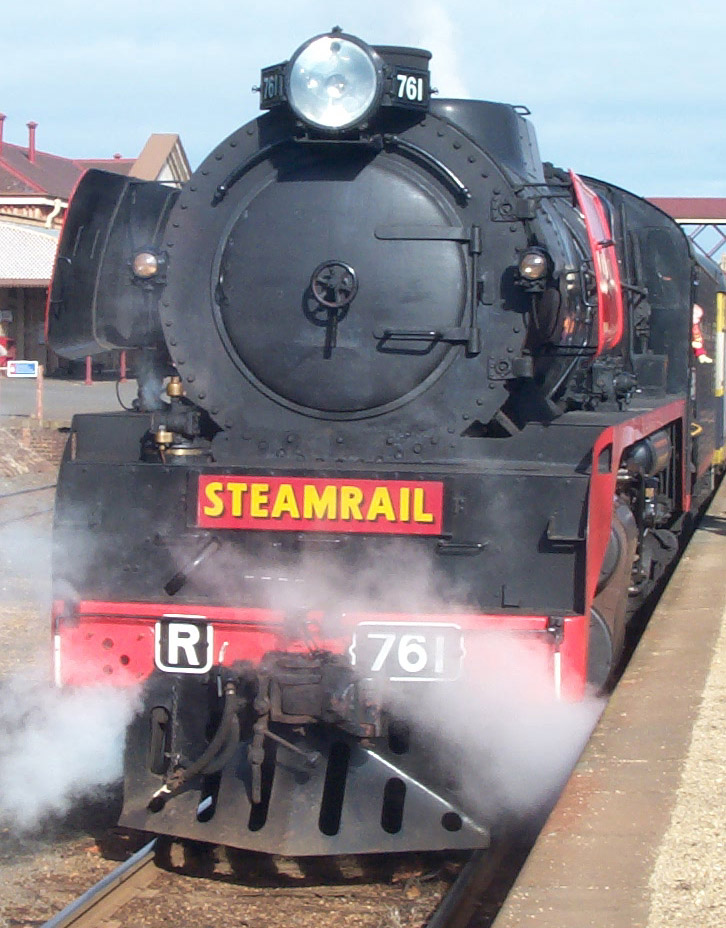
Preserved Victorian Railways R class locomotive R 761 awaits departure from Bendigo railway station, Victoria, 8th June, 2003 Zzrbiker 11:25, 24 December 2006 (UTC)